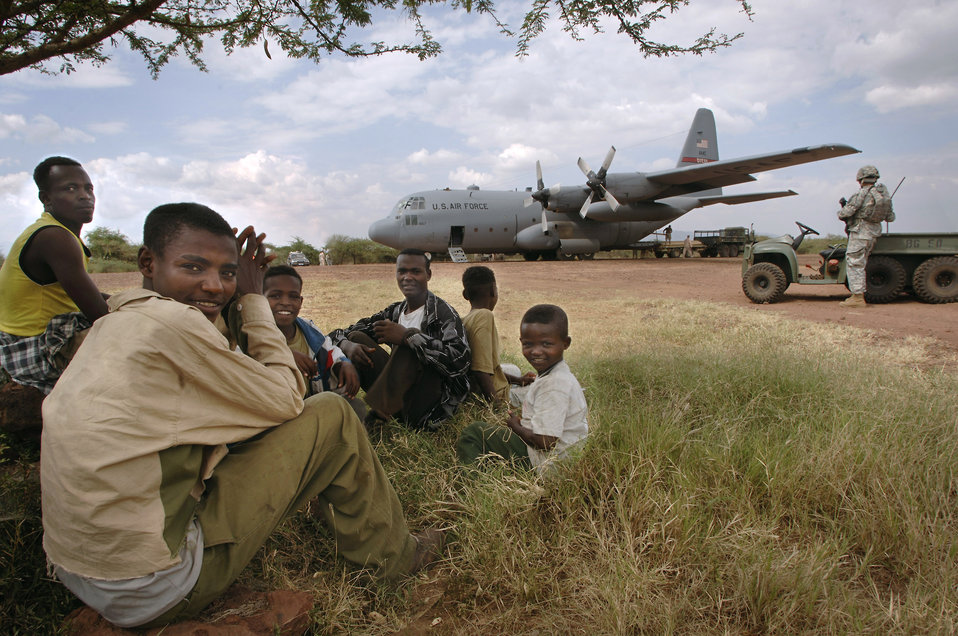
Curious bystanders

Ethiopians from the nearby village of Bilate come out to view a C-130 Hercules deployed from Dyess Air Force Base, Texas. The 4,500-foot dirt runway is the only airstrip available for delivering passengers and cargo to a U.S. contingency operating base in the remote village.